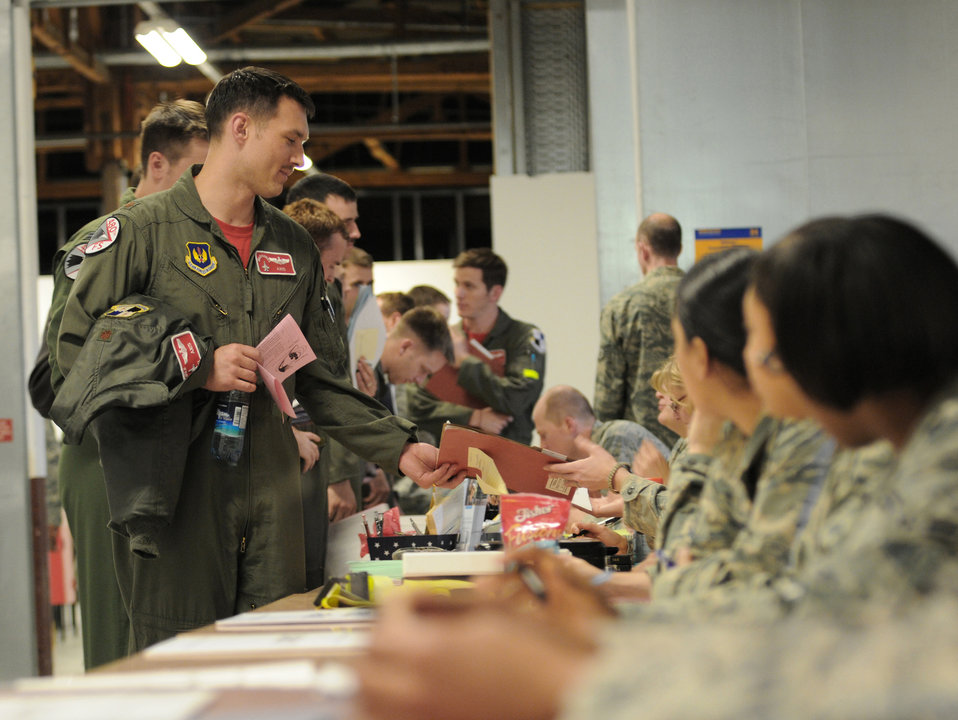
Operation Odyssey Dawn

SPANGDAHLEM AIR BASE, Germany ? Pilots from the 480th Fighter Squadron process through the personnel deployment function line here prior to deploying in support of Operation Odyssey Dawn March 18. Joint Task Force Odyssey Dawn is the U.S. Africa Command task force established to provide operational and tactical command and control of U.S. military forces supporting the international response to the unrest in Libya and enforcement of United Nations Security Council Resolution (UNSCR) 1973. UNSCR 1973 authorizes all necessary measures to protect civilians in Libya under threat of attack by Qadhafi regime forces. JTF Odyssey Dawn is commanded by U.S. Navy Admiral Samuel J. Locklear, III.